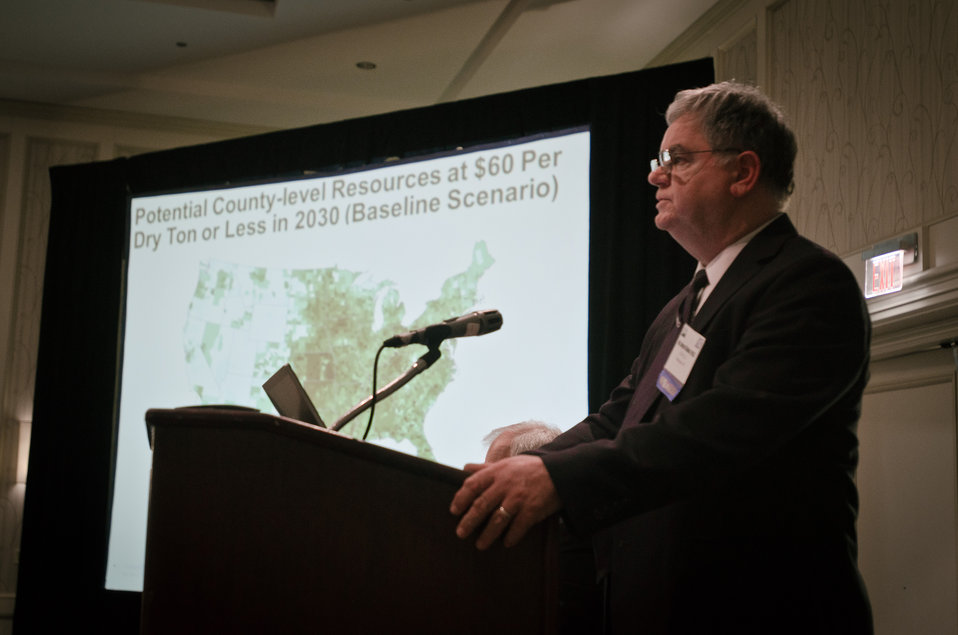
Department of Energy Contractor CNJV LLC Senior Advisor Dr. Bryce Stokes, Ph.D., talked about 'Biomass Potential – the Billion-Ton Study Update' during the Renewable Energy session on “Making Markets for Biomass,” at the 2012 Agricultural Outlook Forum, “Moving Agriculture Forward, Growing, Innovating and Celebrating 150 Years” held at the Crystal Gateway Marriott Hotel in Arlington, Virginia, on Thursday, February 23, 2012. This year’s forum coincides with the 150th anniversary of the Department of Agriculture addressing economics, marketing, research, food safety, nutrition, conservation, rural development, alternative energy, trade and many other agricultural issues.